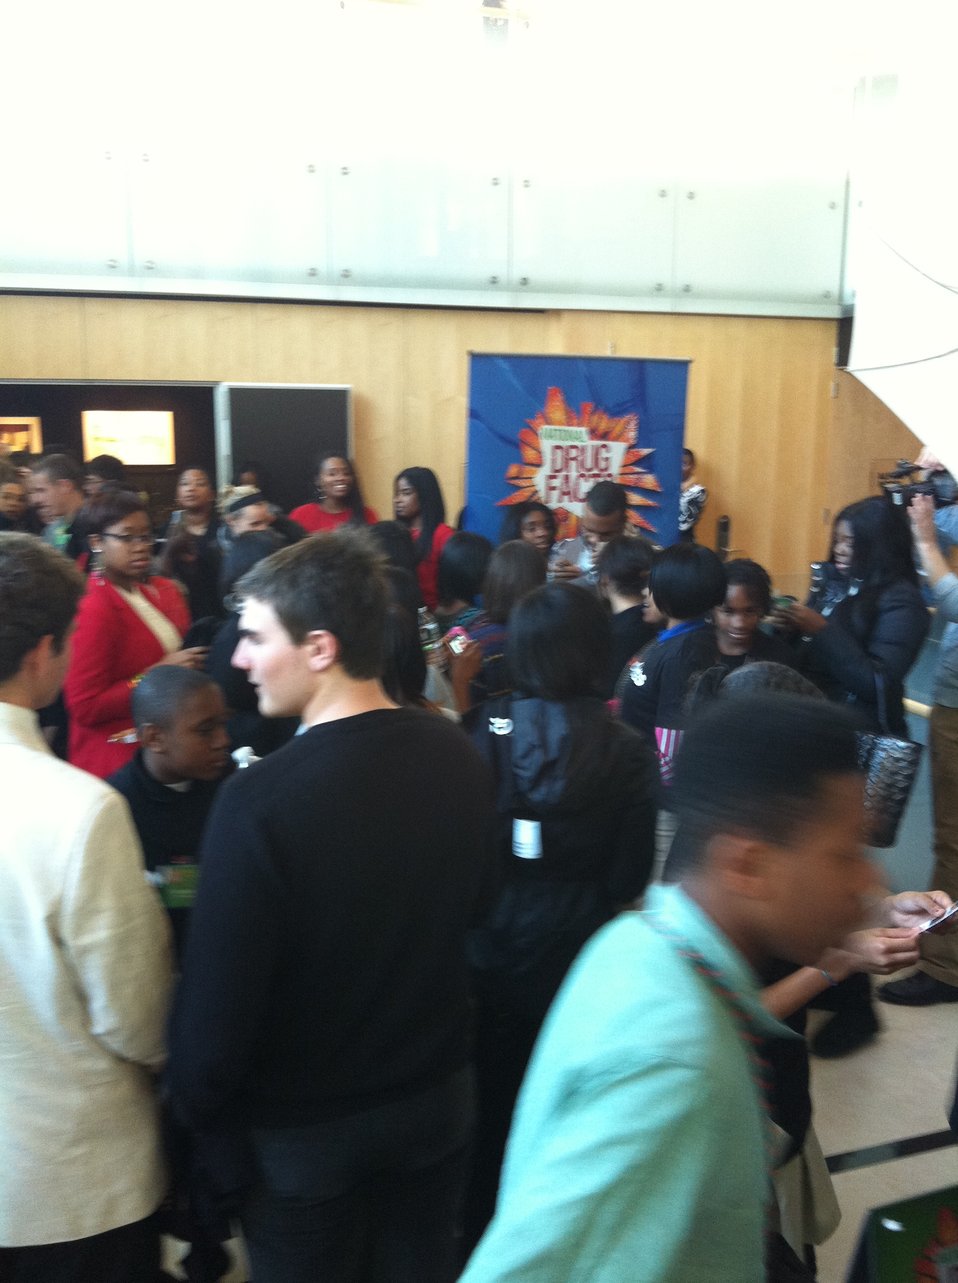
Mentor 20